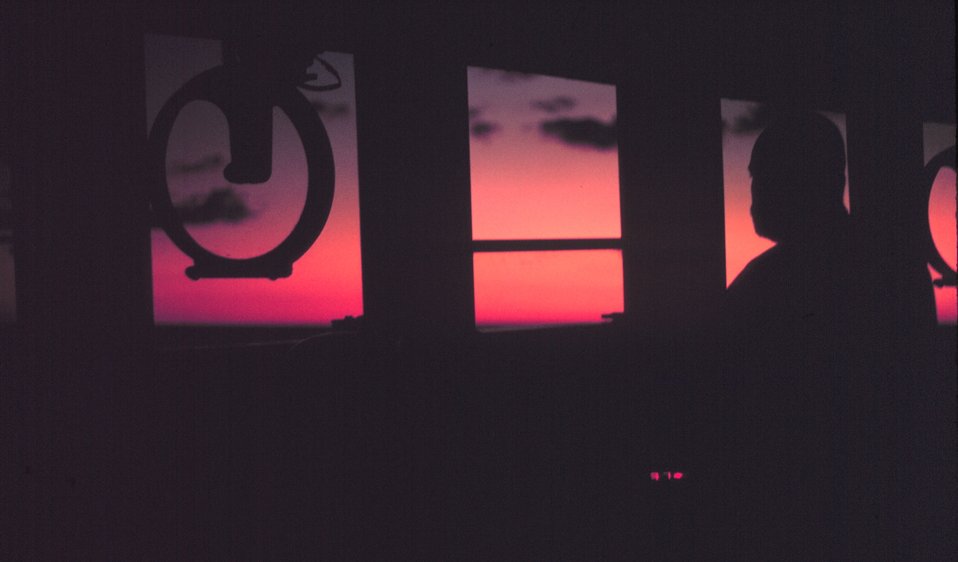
Twilight - a sailor's delight